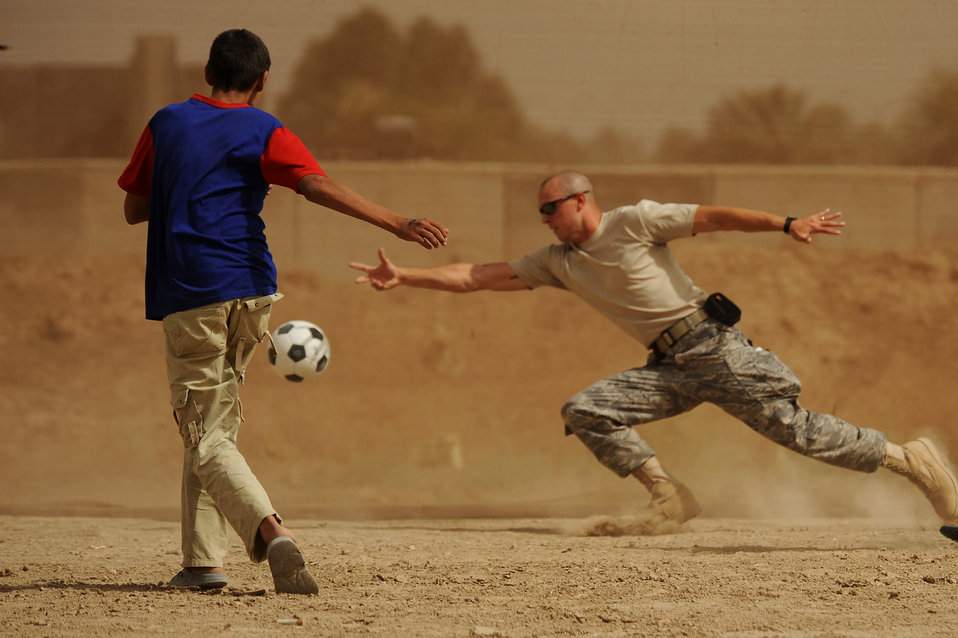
Goal!!!

Senior Airman Charles Woford stretches to block a shot by an Iraqi youngster June 6. The Airman, assigned to Sather Air Base, Iraq, was one of a group who delivered donated toys and gifts to children who live in a nearby village.